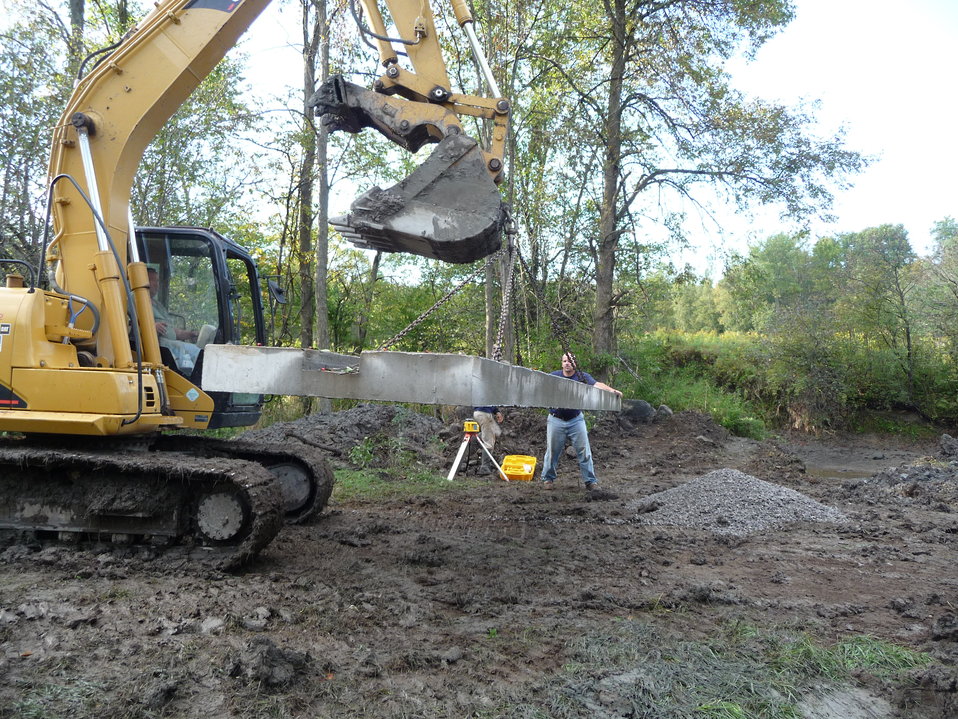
Little Sucker Brook: Laying passage foundation

A concrete foundation was laid beneath the bottomless arch to simulate a natural stream bottom.